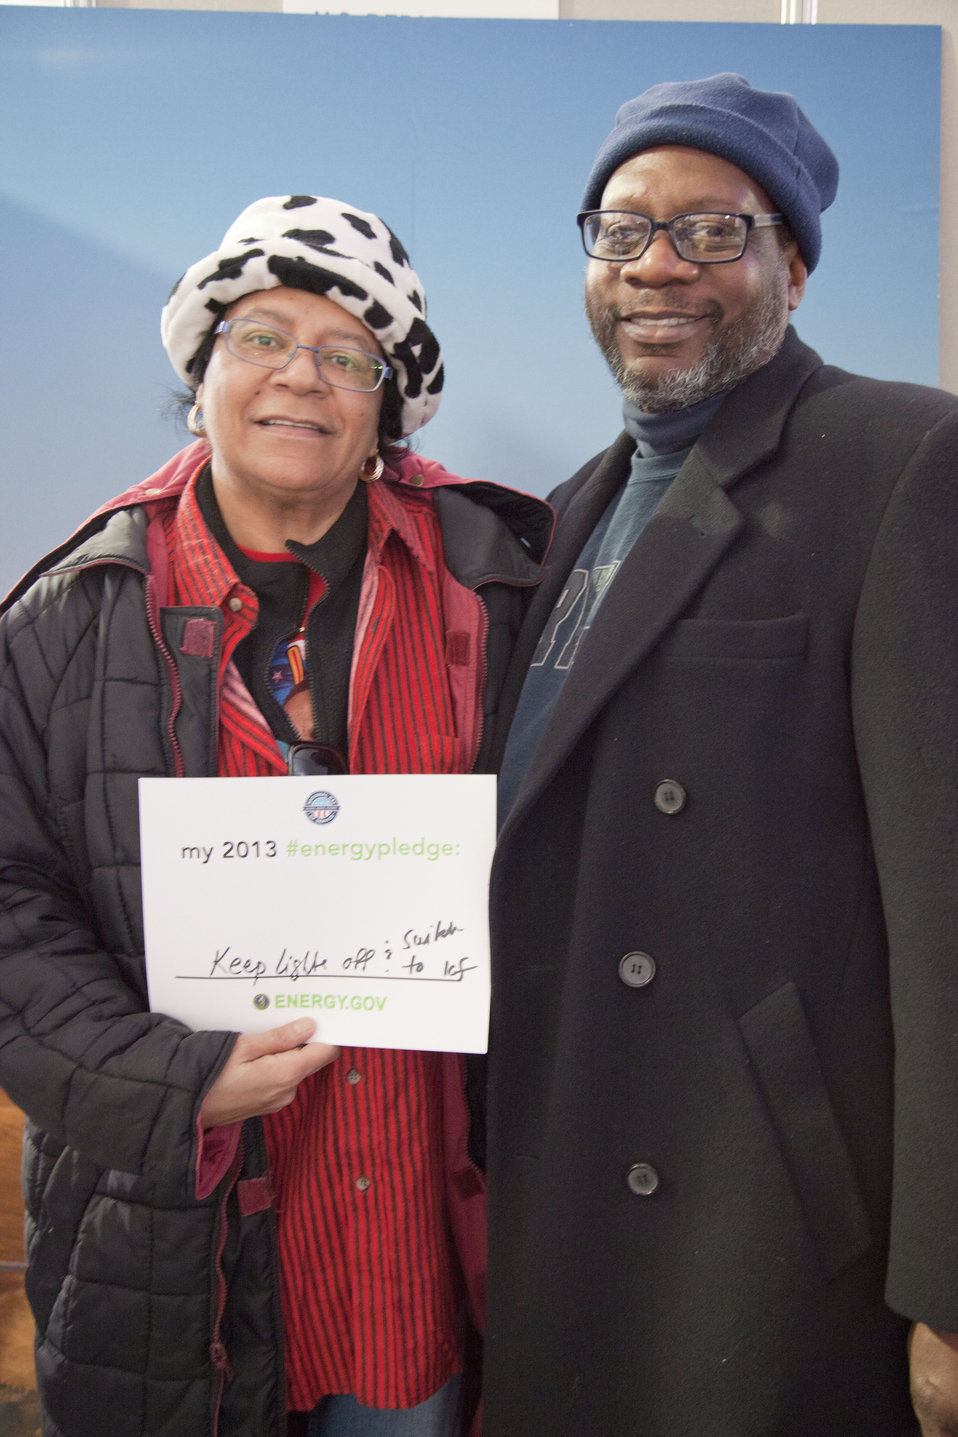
What's your #energypledge?